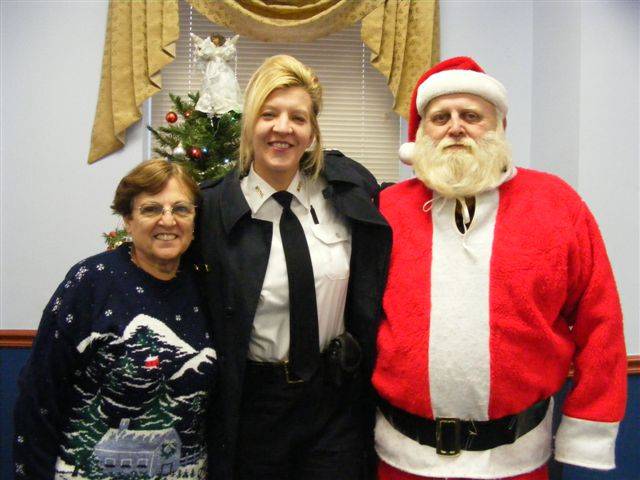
Harry Furr, a Property Management Specialist with the Division of Contracting and Facilities Management, served in the Marine Corps from 1966 to 1986 and was reactivated for Desert Storm 1991. Among the places he served: 1st Bn 13th Marines Vietnam 1968-1969; Marine Security Guard Bn, Henderson Hall, Arlington, Virginia; American Embassy Saigon, Vietnam; Camp Lejeune, North Carolina; Cherry Point, North Carolina; Naval Brig, Portsmouth, New Hampshire; and Okinawa, Japan. He attained the rank of Master Sergeant (E-8).